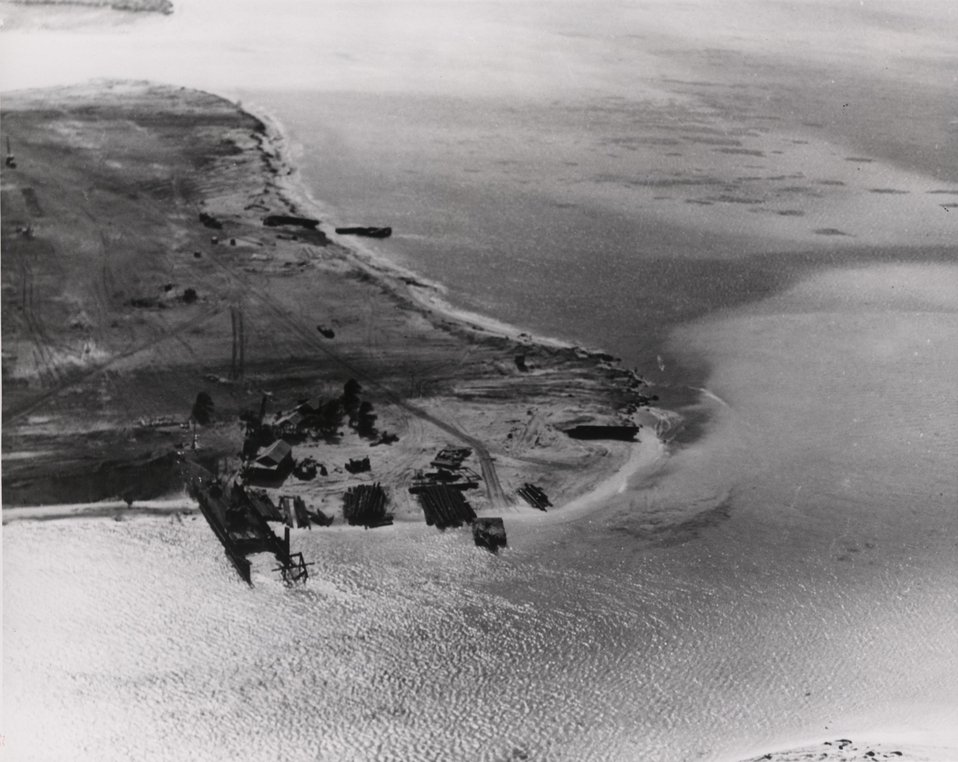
A causeway being built between two of the islands in the Eniwetok Atoll, as part of the preparation foe the experimental tests of the atom bomb.